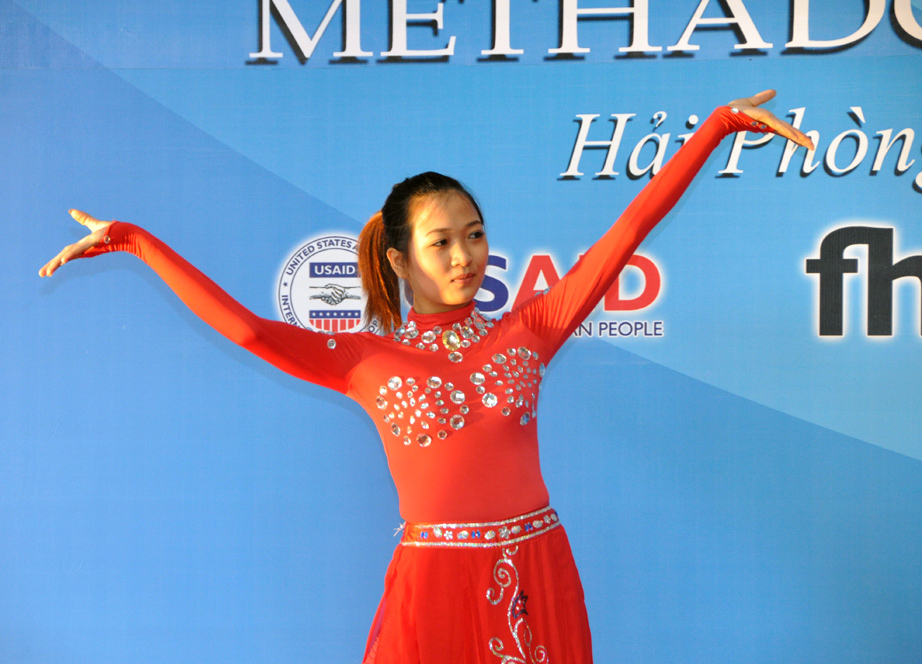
Co-pay Methadone Treatment Center Opens in Hai Phong on June 18, 2011